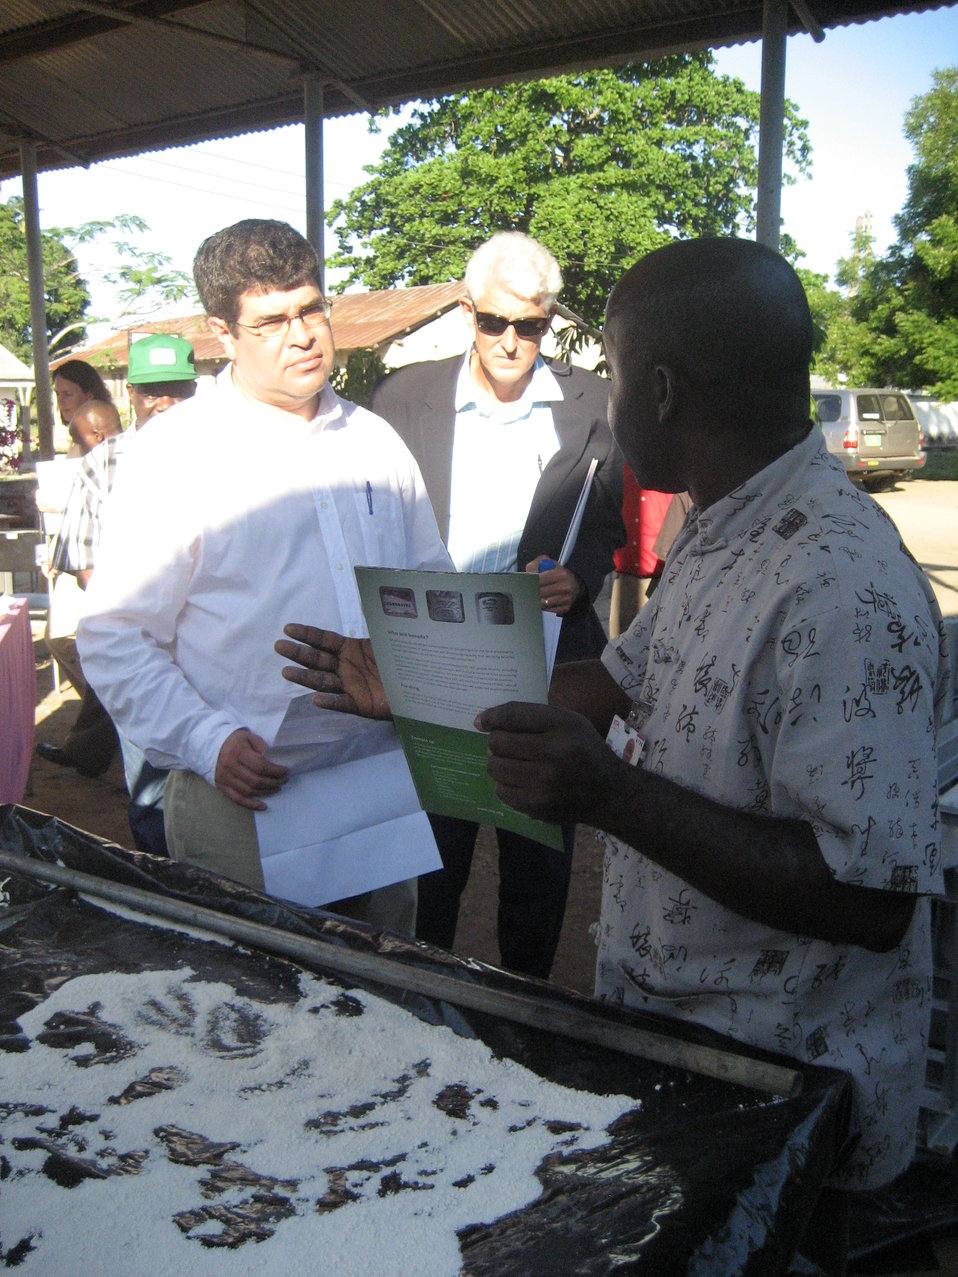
Deputy Secretary Neal Wolin’s trip to Africa 2009

Deputy Secretary Wolin learns about the drying process for cassava products.